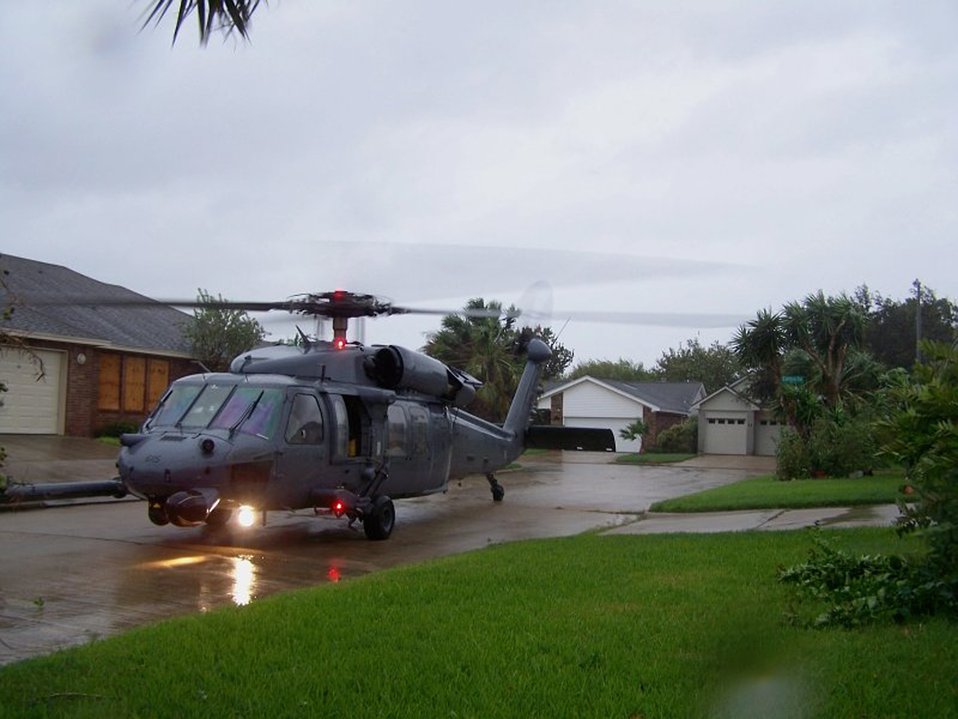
JTF-129 Airmen rescue civilians stranded in Galveston

Joint Task Force-129 crew, Jolly 92, lands in a tight space between houses to rescue an adult male in Galveston, Texas, Sept. 12. The California Air National Guard crew of Jolly 92 rescued six civilians and pets stranded in Galveston.